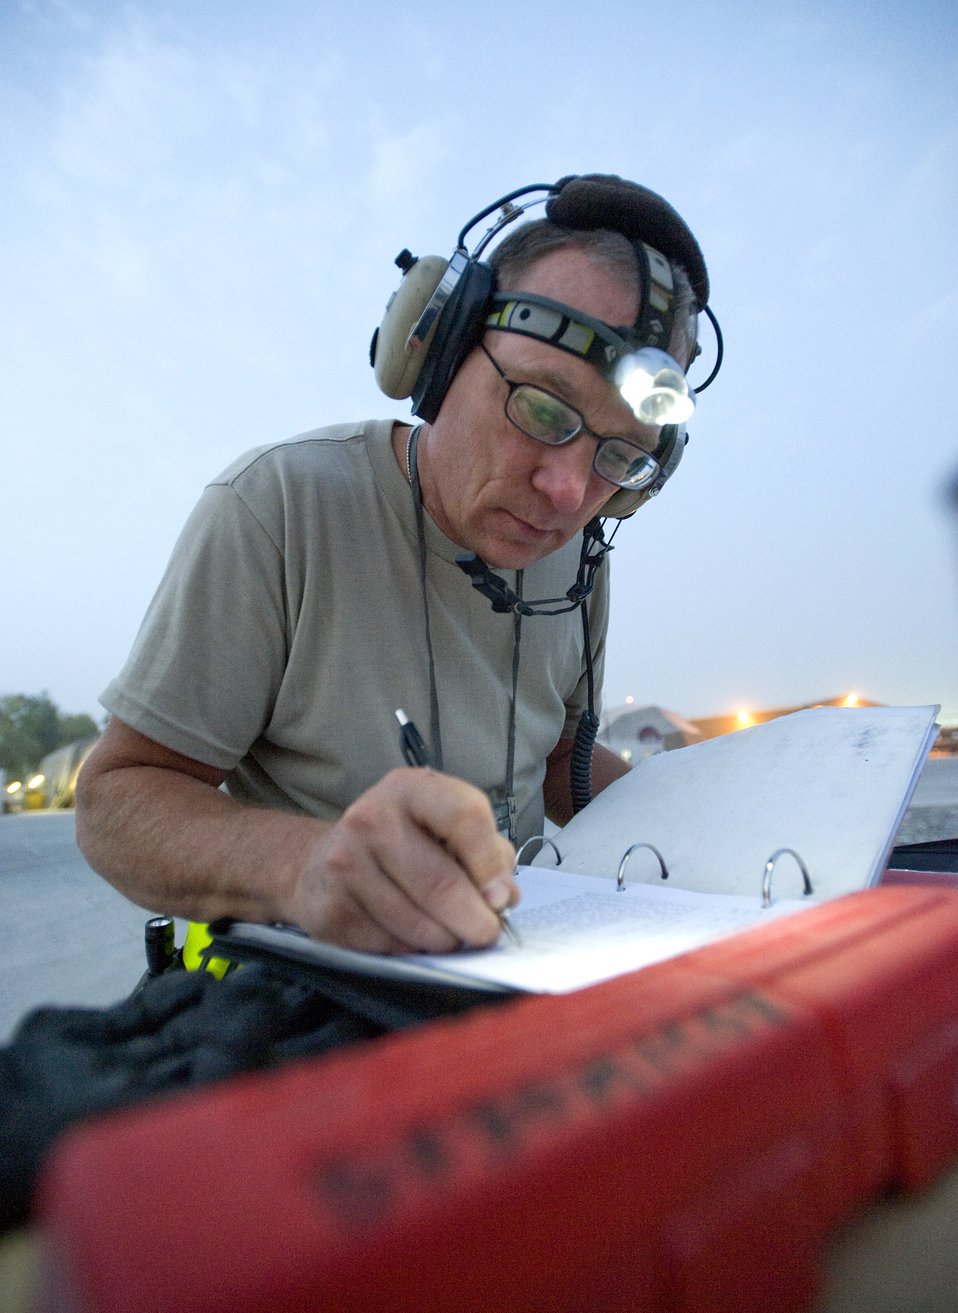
Airmen enhance Army medical evacuation mission

Master Sgt. William St. Clair updates maintenance records on an HH-60 Pave Hawk before a flight Aug. 15 at Kandahar Air Base, Afghanistan. Sergeant St. Clair is a crew chief on the HH-60. The aircraft as well as the crews who fly and maintain it are assigned to the 305th Expeditionary Rescue Squadron from Davis-Monthan Air Force Base, Ariz.